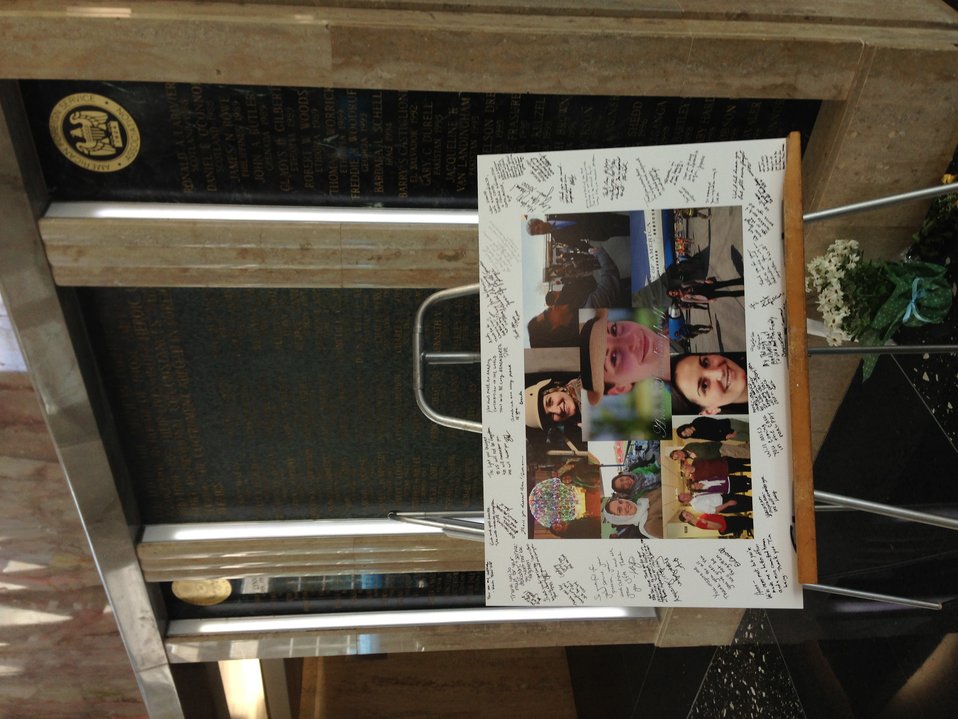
Tribute to Foreign Service Officer Anne Smedinghoff

A photo board with photos of Anne Smedinghoff, a Foreign Service Officer killed in Afghanistan, stands in the Diplomatic Lobby of the U.S. Department of State on the day of her wake, April 16, 2013.